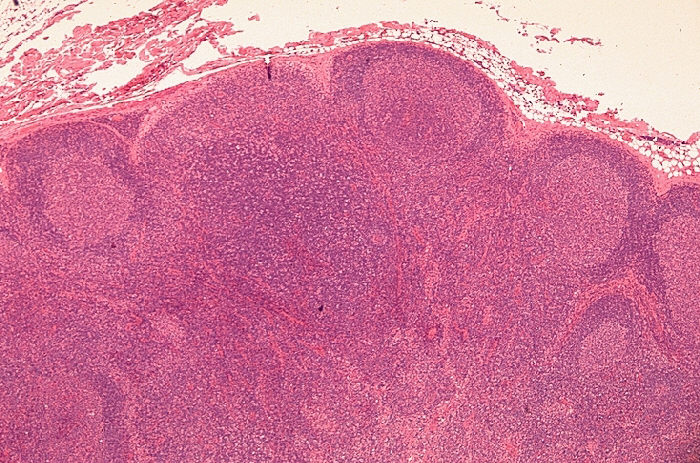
Histopathology of lymphadenopathy due to HIV-1 infection.